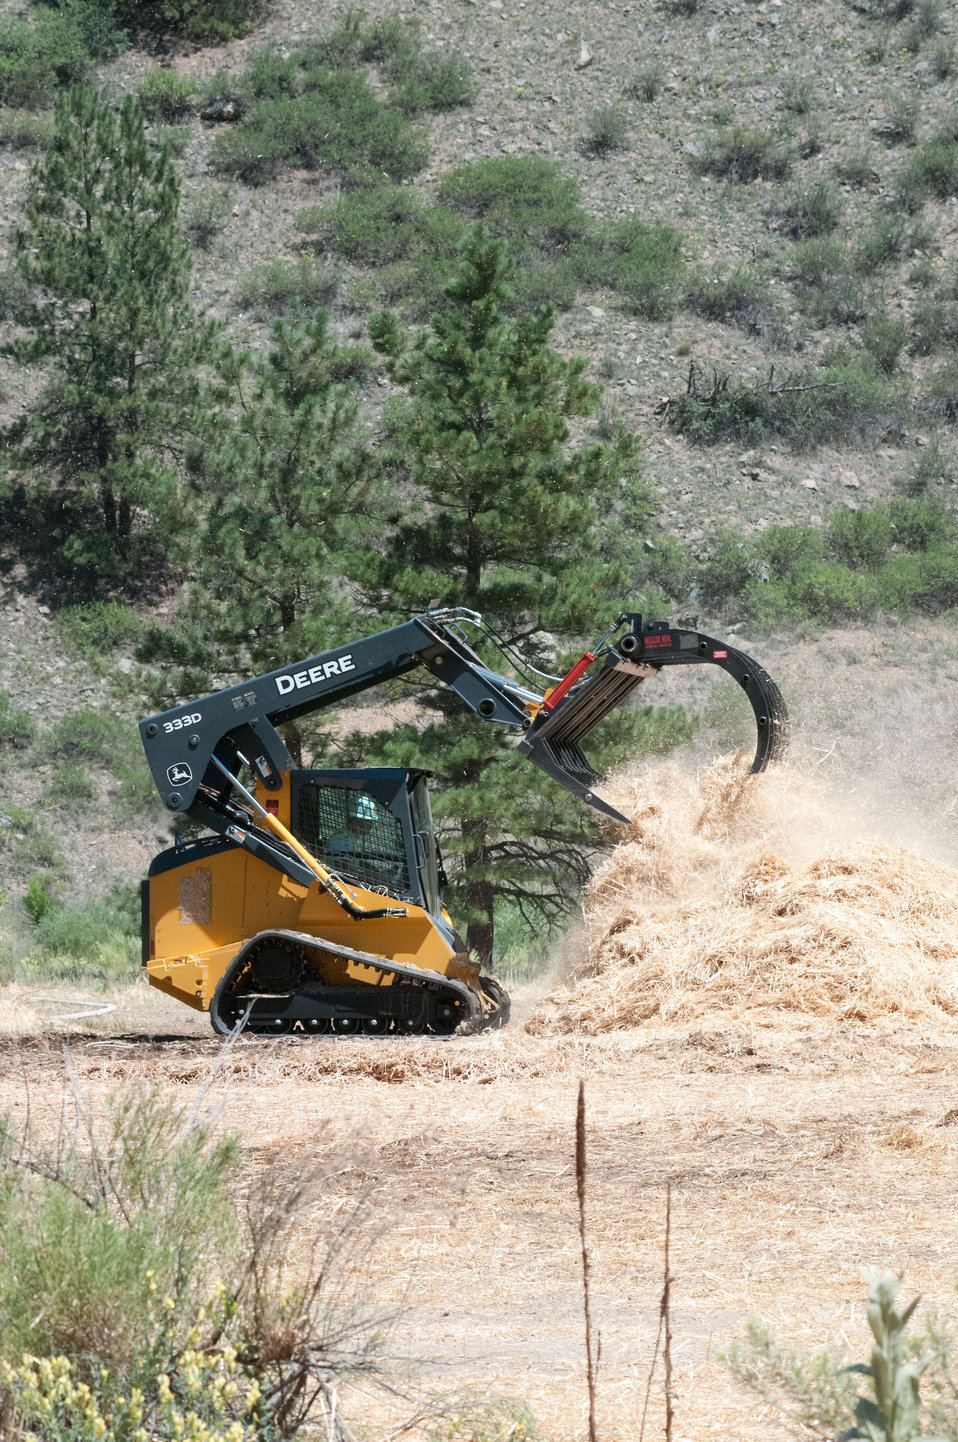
A hydraulic hay fork grapple attachment makes easy work of loosening and adjusting straw bale density and weight for the continuing aerial application of straw to mitigate soil and ash runoff from the mountainous terrain leading to Seaman Reservoir, drinking water resource for the City of Greeley, on Friday, July 20, 2012. Bell UH-1H (2-blade rotor) and A-Star Model B (3-blade rotor) aircraft launched from a landing zone at the foot of the reservoir spillway. The 100-150-food sling lines hold and release loads of certified straw weighing 1,400 – 2,000 pounds. 4-person load crews and heavy equipment operators unloaded 1,000 pound straw bales from tractor trailer rigs, stack them near the pickup point, then bring the bales onto cargo nets, open then loosen and adjust the load on cargo nets for helicopters to lift and drop them onto barren, burned out tributary lands. Forest service lands received straw, while private and other lands receive a seed mix and straw to promote ground cover plant growth on ash-covered lands. In total, 1,800 tons of straw will be applied during the 14-day operation. One quarter of the cost was paid by the City of Greeley and the U.S. Department of Agriculture funded the remainder. The Hewlett Gulch Fire was started by a camper’s alcohol stove, on May 14, at the saddle of a picturesque mountain ridge along the Hewlett Gulch Trail of Poudre Canyon, in the Roosevelt National Forest, 60 miles north of Denver. At it’s more than 400 firefighters were battling fires being pushed by 50 mph winds that helped blacken over 12-square-miles of dry ground cover, brush and trees. Many of the trees were already dead and tinder dry from beetle-kill. The water in the reservoir remains clean and clear, while downstream water flow has gone from famous Colorado clear water to nearly black flows of water heavily laden with ash, silt, and burnt debris that recent thunderstorms have already washed down from the mountainsides.